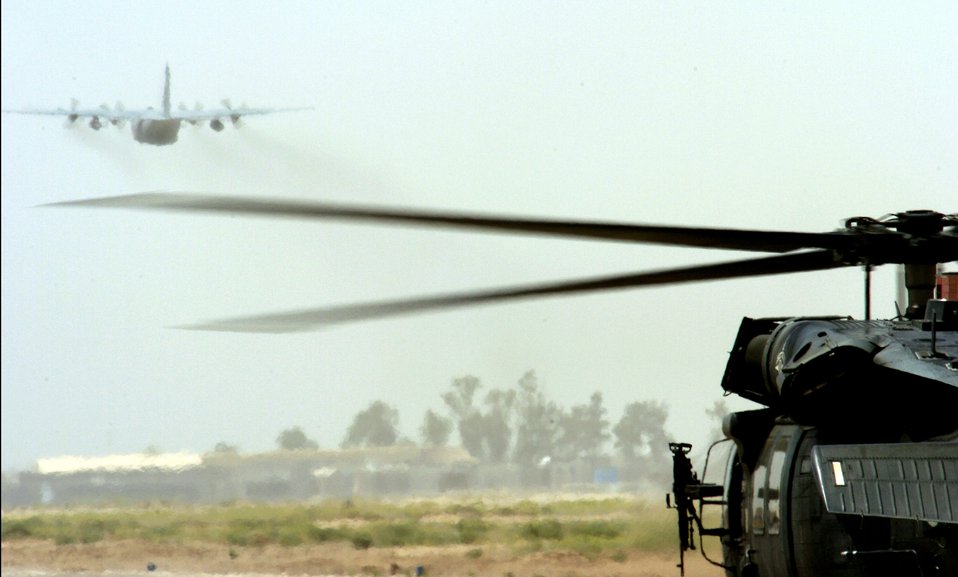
Maintenance unit keeps aircraft flying

A C-130 Hercules takes off as a UH-60 Black hawk taxis past, at Balad Air Base, Iraq on May 17, 2006. The 777th Expeditionary Airlift Squadron has launched more than 3700 sorties that moved more than 54,200 people and 11,790 tons of cargo. The unit comprises active duty, Guard and Reserve aircraft and Airmen.